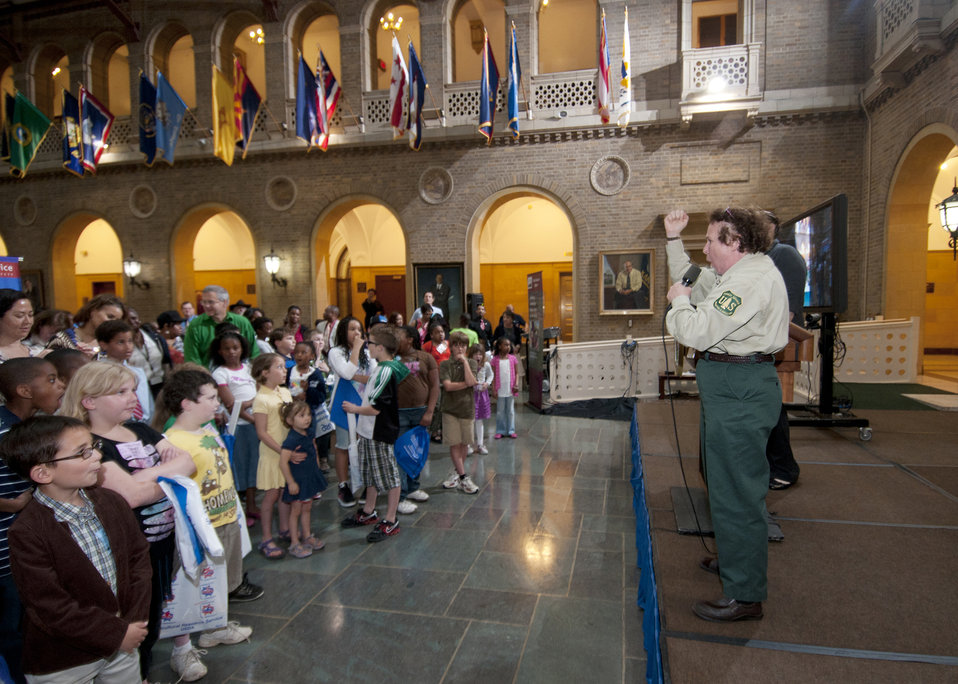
The U. S. Department of Agriculture (USDA) held its annual “Take Your Child to Work Day” on the patio of the Whitten Building, in Washington, DC, on Thursday, April 28, 2011. The program is designed to introduce young people to USDA’s wide range of responsibilities and services. Forest Service wildlife biologist Vicki Arthur is a teaching the children how to hoot like an owl. Ms. Arthur used this talent to attract owls and to observe their behavior in the wild.